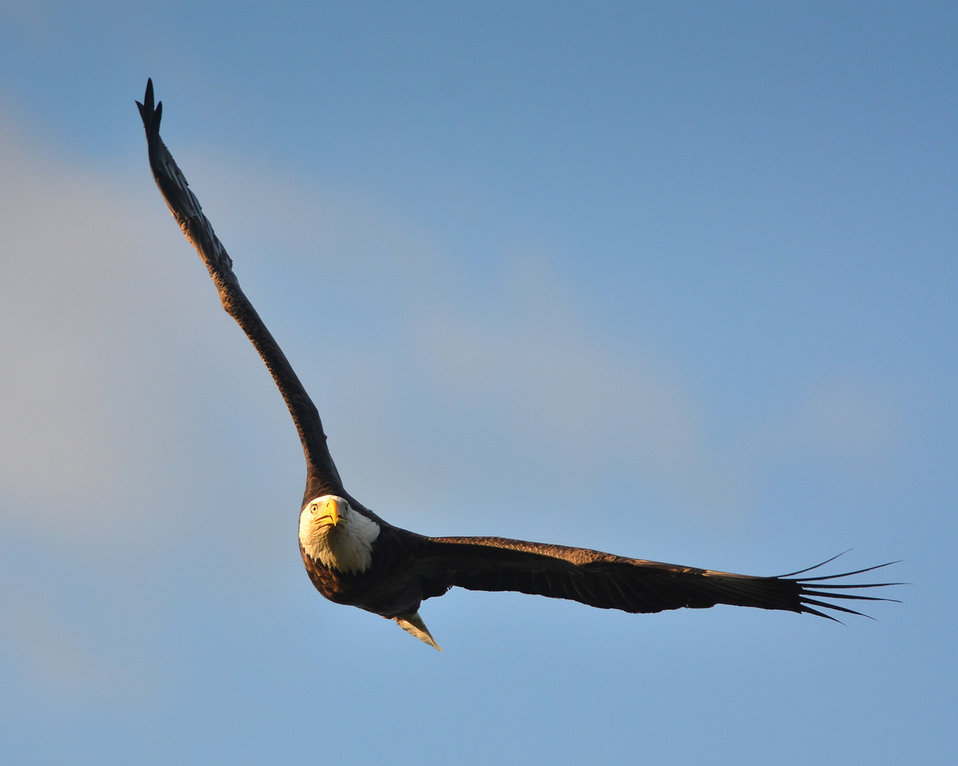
Bald eagle soaring over Cape May National Wildlife Refuge.